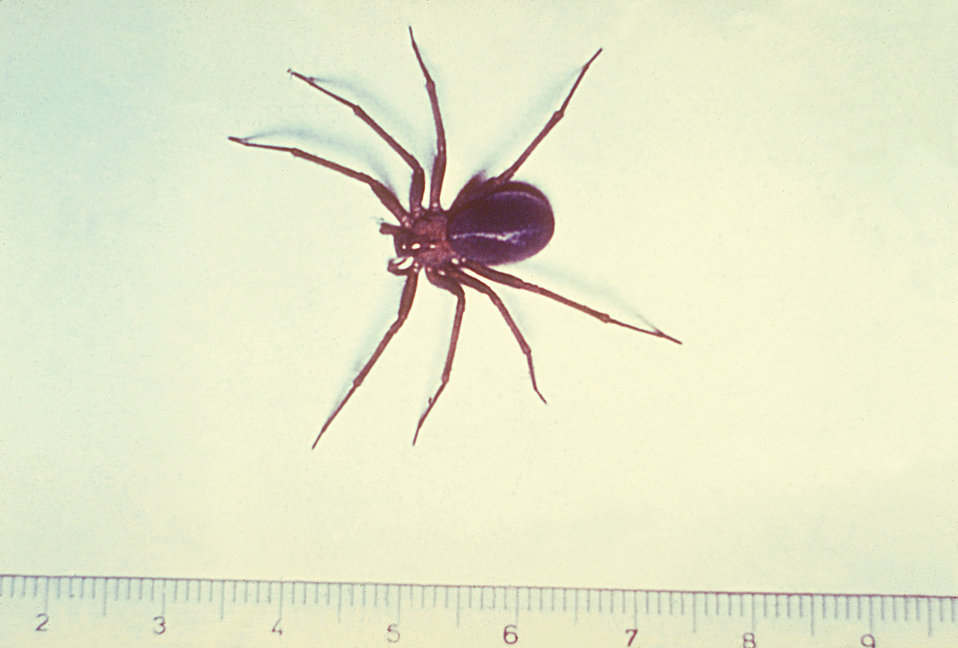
This is a photograph of the Loxosceles laeta, the 'Chilean recluse' spider of Central South America.